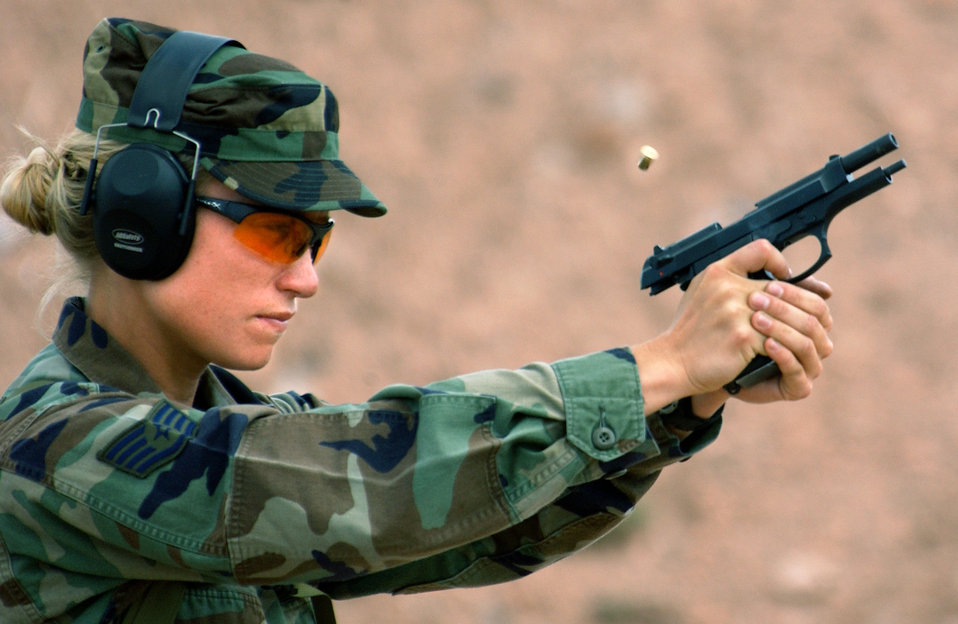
Poppin' rounds

FORT HUACHUCA, Ariz. -- Staff Sgt. Sally McCabe fires a M-9 Berretta at iron targets during a course of fire that will test marksmanship and speed Oct. 11. Members of the U.S. Air Forces in Europe Defender Challenge team are spending three weeks here in preparation for the 2004 Defender Challenge competition. Defender Challenge held at Lackland Air Force Base, Texas, is a security forces competition pitting competitors from major commands against one another over a series of events including marksmanship, tactics and physical fitness. Sergeant McCabe is assigned to the 85th Security Forces Squadron, Keflavik Air Base, Iceland.